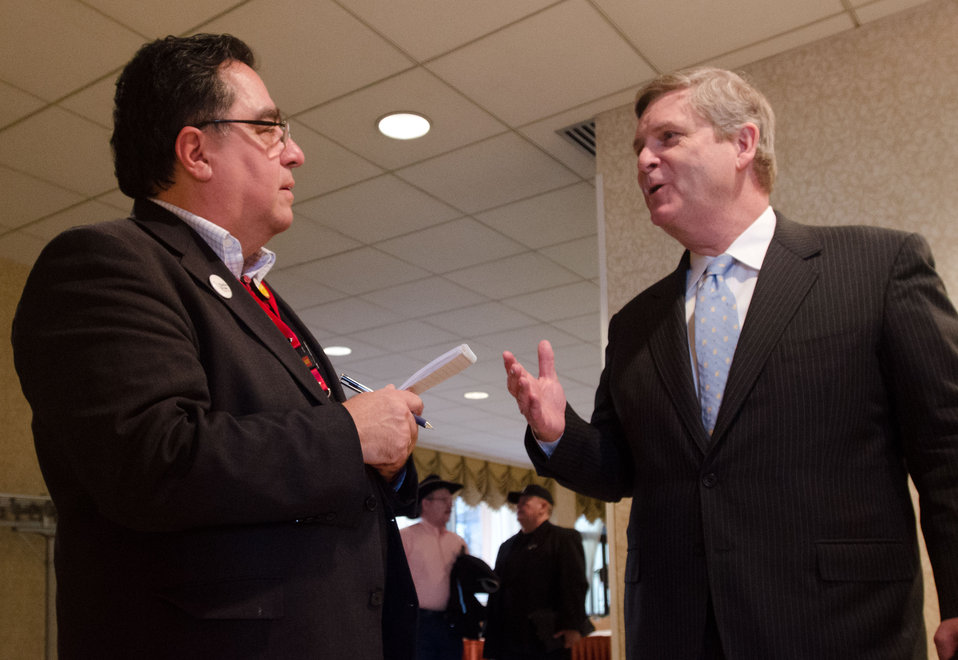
Agriculture Secretary Tom Vilsack (right) took a little time to talk with Native News Network.com Editor-In-Chief Levi Rickert (left) at the National Congress of American Indians Tribal Nations Legislative Summit at L’Enfant Plaza Hotel in Washington, D.C., on Wednesday March 7, 2012. Secretary Vilsack has made improving relations with Native American Tribes a priority by creating the Office of Tribal Relations and directed all U.S. Department of Agriculture (USDA) agencies to be more aware of tribal issues and engage in tribal consultation and collaboration. Secretary Vilsack reiterated USDA’s support to Native American communities with financial support for electric, broadband and wastewater infrastructure, and providing families and businesses with home loans and business grants. Secretary Vilsack emphasized USDA’s participation in the First Lady’s Lets Move in Indian Country initiative to combat childhood obesity in tribal communities.